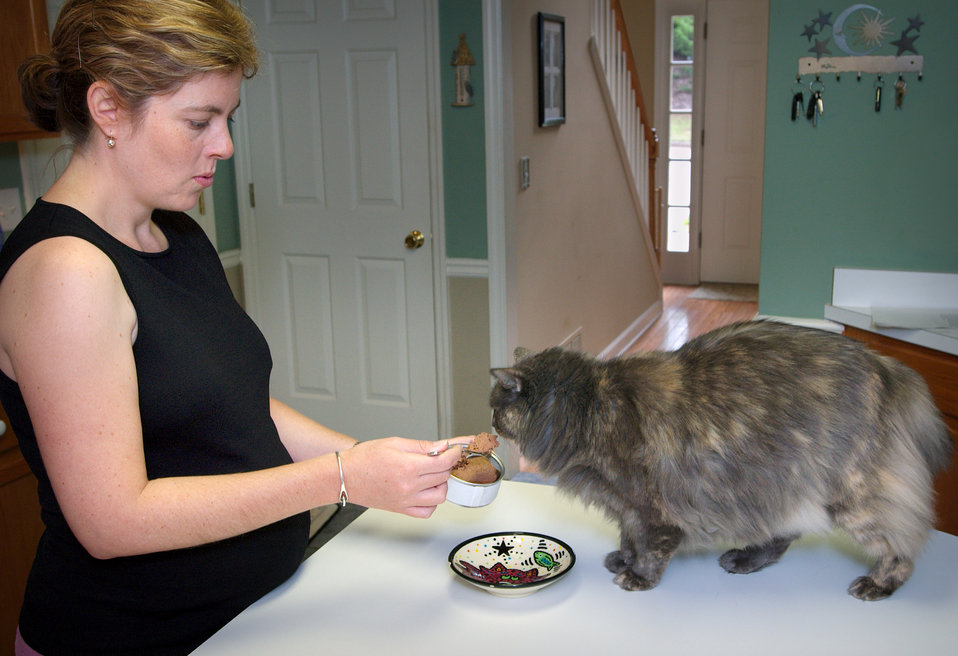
This photograph showed a pregnant woman feeding her cat 'canned' cat food, in order to prevent it from becoming infected with the parasite, Toxoplasma gondii. An infected cat can cause harm to individuals with a weakened immune system, and a pregnant woman's unborn child. Though feeding her cat canned food is a good practice, the cat should also be kept off of any countertops on which food preparation could take place, such as in a kitchen setting.